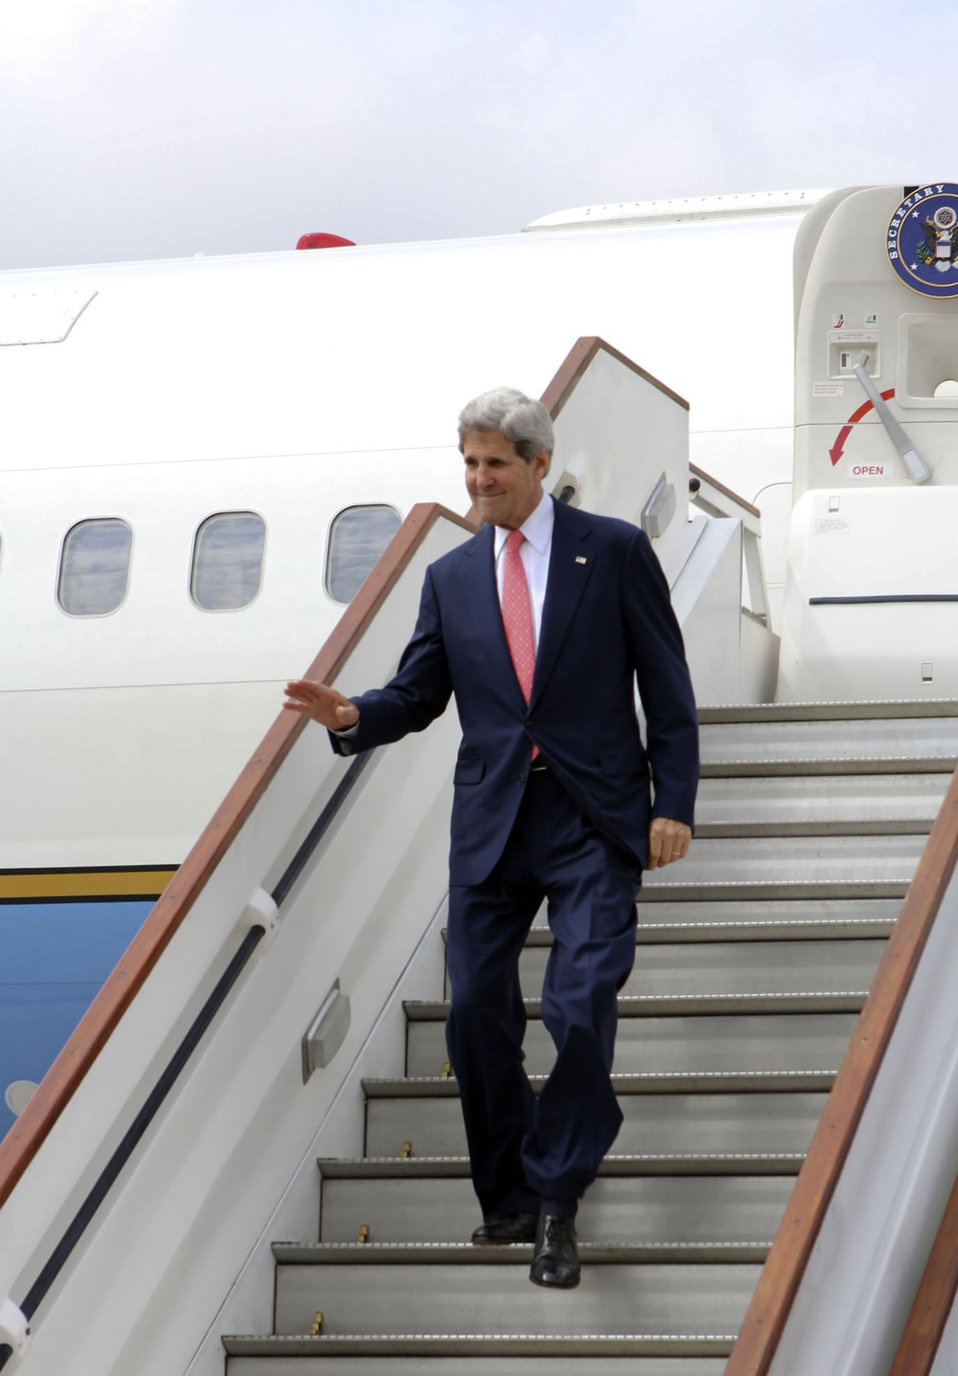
Secretary Kerry Arrives in London

U.S. Secretary of State John Kerry disembarks from the plane upon arriving in London, United Kingdom, following his visit to Islamabad, Pakistan, on August 2, 2013.